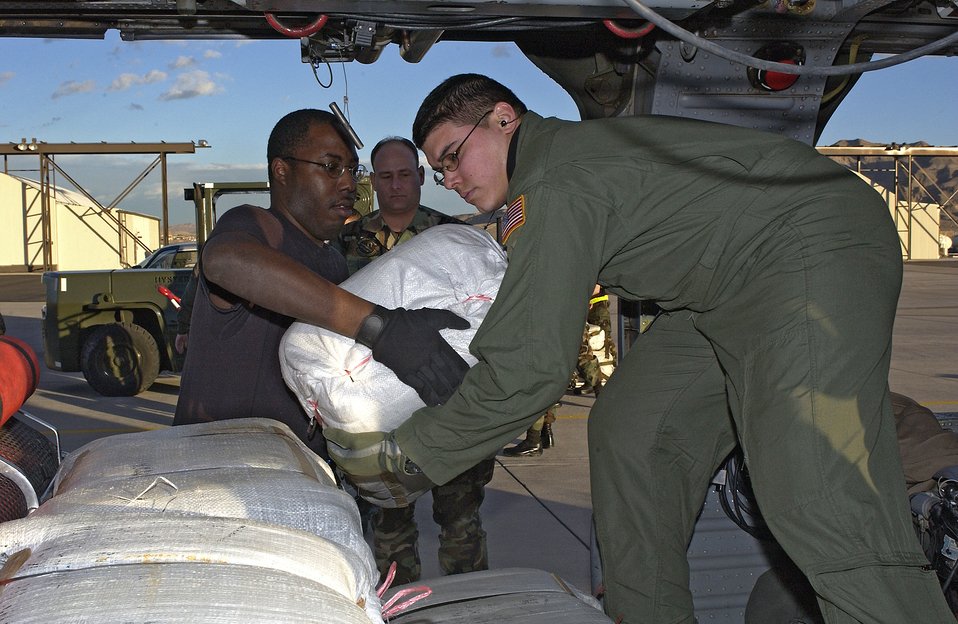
Airmen aid Nevada flood effort

NELLIS AIR FORCE BASE, Nev. -- Staff Sgt. Leo Cruz (right) and Senior Airman Reginald Hobbs load bundles of empty sandbags onto an HH-60G Pave Hawk helicopter here Jan. 11. Four helicopters from here and a C-130 Hercules from the Nevada Air National Guard delivered the sandbags and evacuated 118 students and 19 staff members from a youth center in Caliente, Nev., after flooding cut off ground access to the facility. Sergeant Cruz is an aerial gunner assigned to the 66th Rescue Squadron here; Airman Hobbs is an avionics specialist assigned to the 763rd Maintenance Squadron.